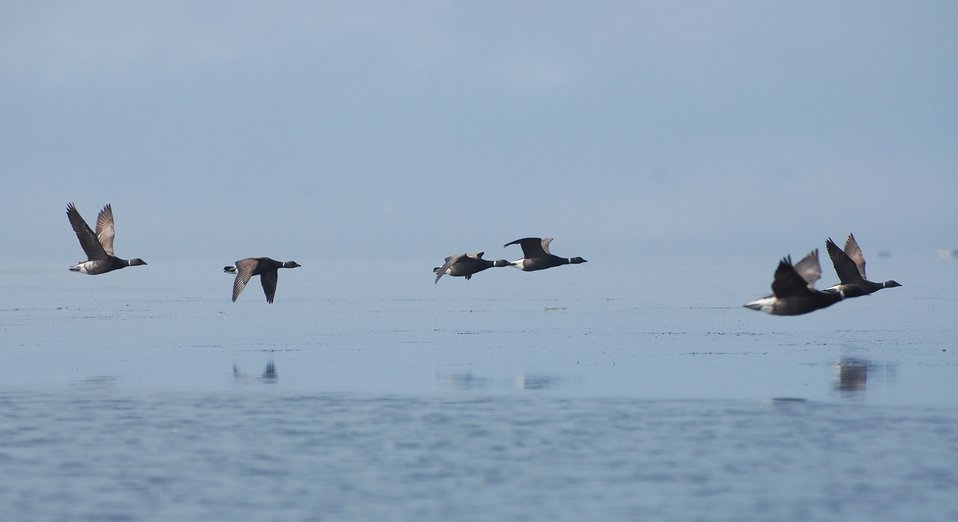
Brant, Izembek Lagoon, Izembek National Wildlife Refuge
Photo by Kristine Sowl, USFWS, Public domain